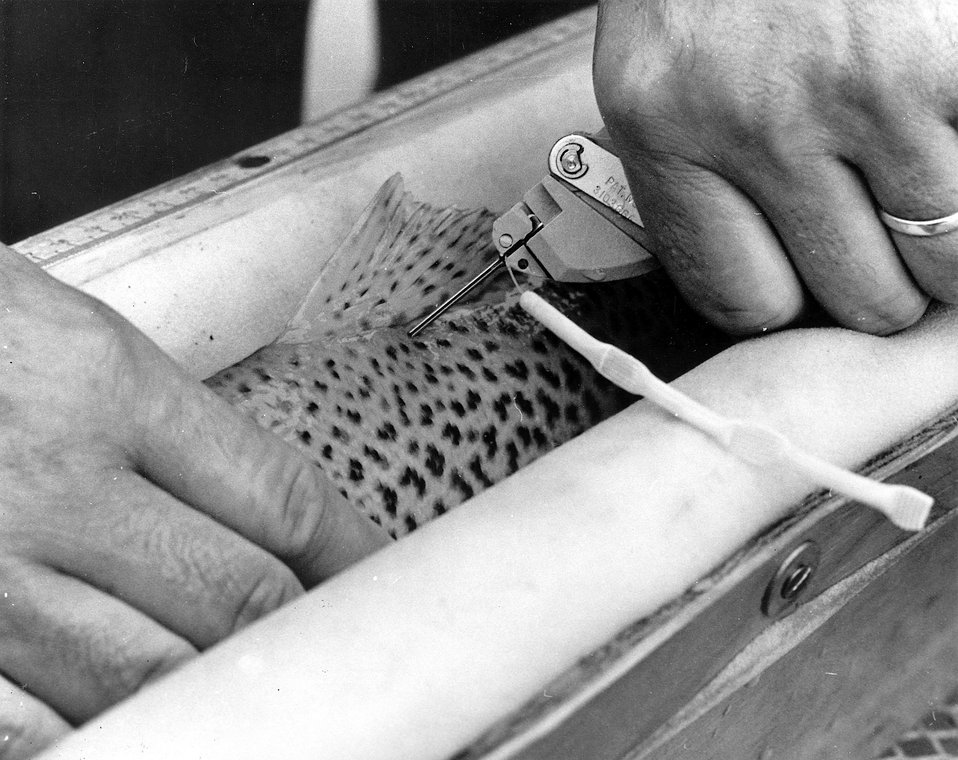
A plastic tube about four inches long is attached to fish by means of a thin nylon hook.
c.1973